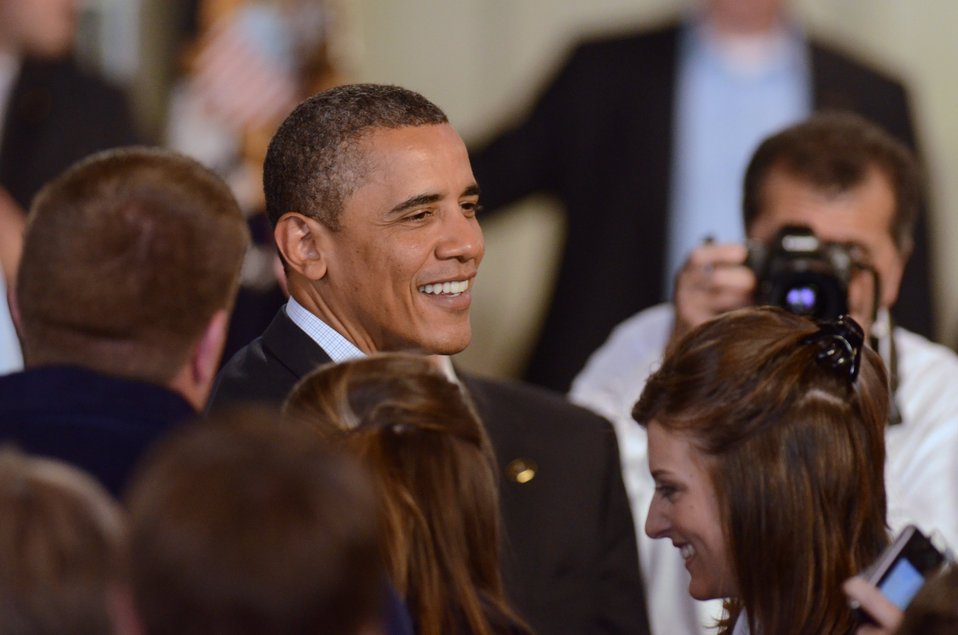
President Barack Obama shakes hands with members of the audience at the Northeast Iowa Community College, for a White House Rural Economic Forum on Tuesday, Aug. 16, 2011. The President’s visit will focus on agriculture’s contribution to the national economy, and how to create more jobs in rural America.